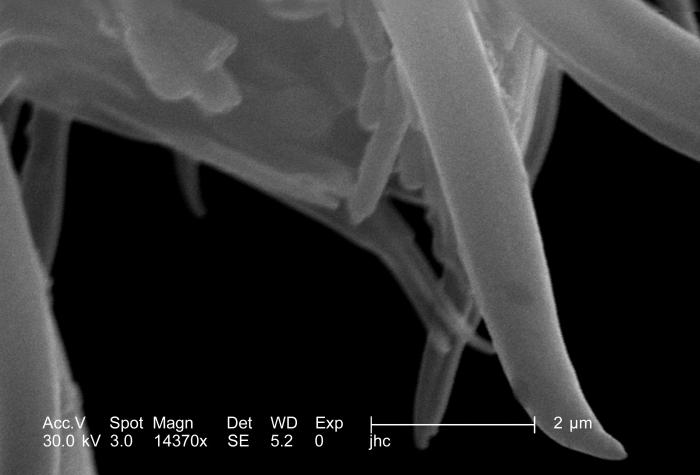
Under a high magnification of 14370x, which is approximately 4x that of PHIL 8787, this scanning electron micrograph (SEM) revealed some of the morphologic features displayed on the distal tip of an Anopheles gambiae mosquito's "labellum". The labellum is the tip of the ensheathed proboscis, which retracts as the sharp stylets contained within pierce the host's skin surface, as the insect obtains its blood meal.